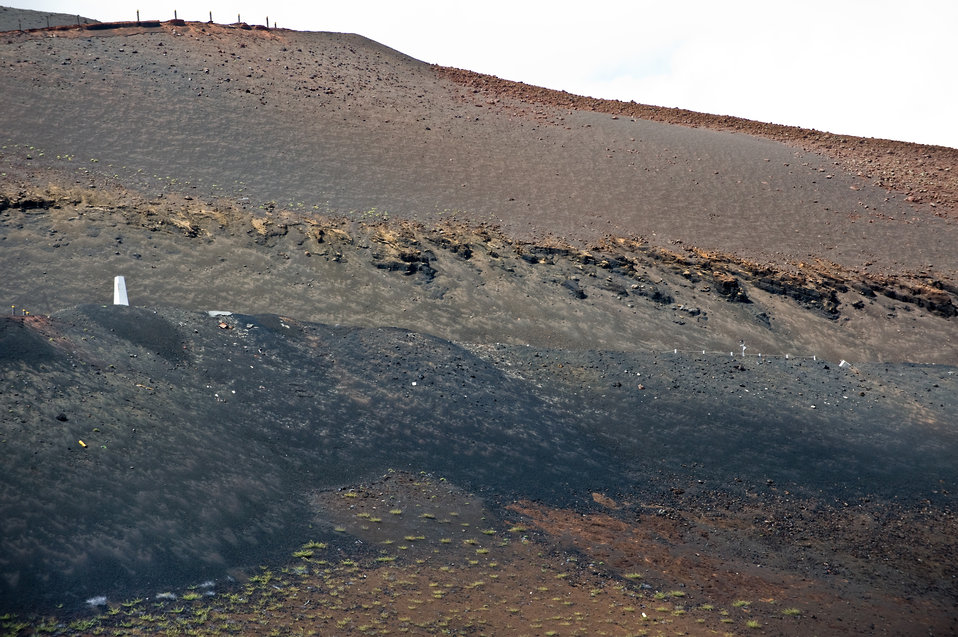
Robert's Plants

Ascension Spurge (E. origanoides), an endangered species of plant found only on the Ascension Island, predominantly on the properties used by the 45th Operations Group, Detachment 2, Ascension Auxiliary Airfield (AAF), in the South Atlantic Ocean. A few dozen of these plants survive in the wild near the white marker, halfway up a rugged volcanic hill. Nearby, a weather station records environmental conditions of this spurge site. Ongoing studies by the Computer Sciences Raytheon contract environmental engineering associates have taught them that this endemic plant survives best in these remote locations. Understanding the weather can help choose better locations and conditions to replant and promote the survival of this small plant. Evasive plants spread across the foreground occupying space that the spurge needs to establish itself and send roots deep into the rocky hillside. Although, all U.S. Air Force bases have environmental programs, this small remote island environment allows easy observation of the efforts supporting the endangered spurge plant and self-sufficient water, power and waste programs.